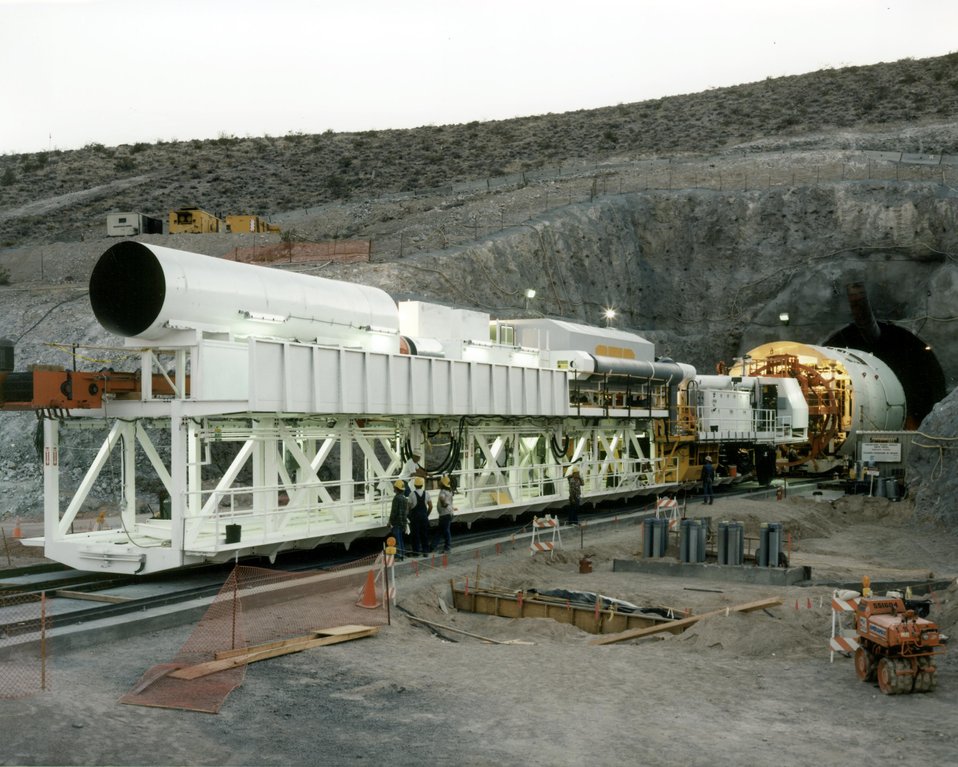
TUNNEL BORING MACHINE APPROACHING STARTER TUNNEL FROM EXPLORATORY STUDIES FACILITY BOX CUT.

YUCCA MOUNTAIN IS THE SITE CONGRESS DESIGNATED FOR STUDY TO DETERMINE ITS SUITABILITY AS A GEOLOGIC REPOSITORY FOR THE NATION'S SPENT NUCLEAR FUEL AND HIGH LEVEL RADIOACTIVE WASTE. IT IS 100 MILES NORTHWEST OF LAS VEGAS IN AN ISOLATED PART OF NYE COUNTY. THE LONG NARROW RIDGE IS IN AN ARID TRANSITION ZONE BETWEEN THE LOWER MOJAVE DESERT AND THE RUGGED BASIN AND RANGE REGIONS.